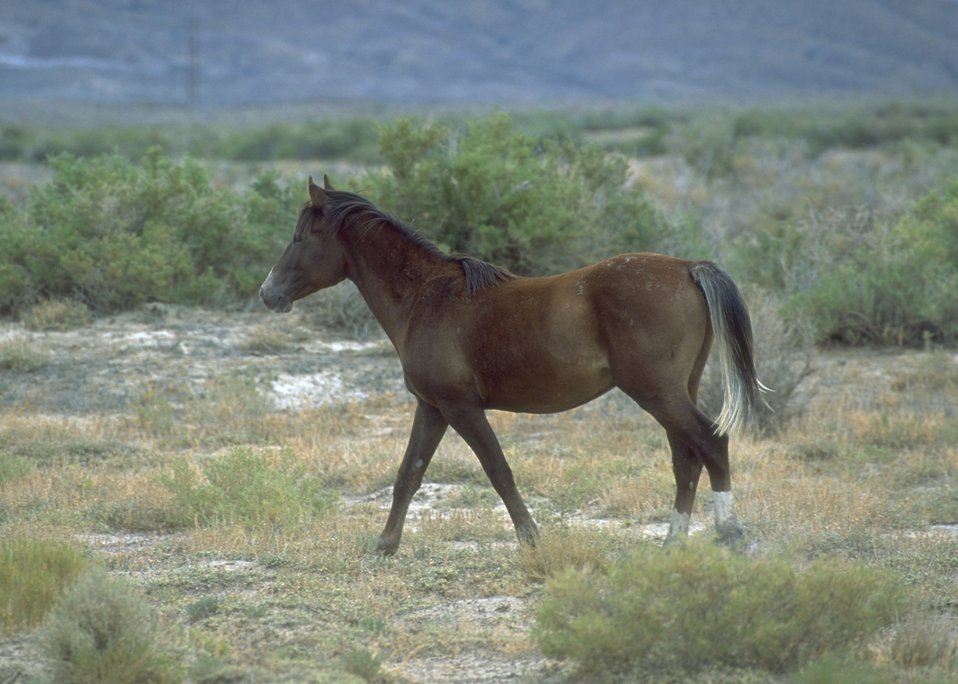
Wild horses, Rock Springs Field Office.